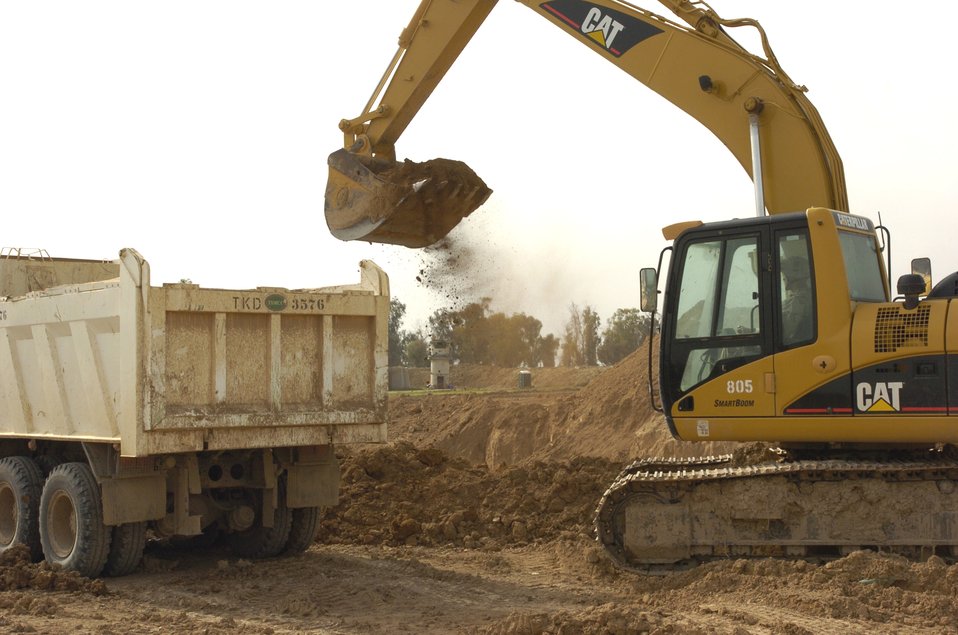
Engineers support the fight

Air Force engineers from the 557th Expeditionary Red Horse Squadron work to improve the quality of living for Soldiers from 1st Battalion, 327th Infantry Regiment, 101st Airborne Division, stationed on Forward Operating Base McHenry, Iraq.